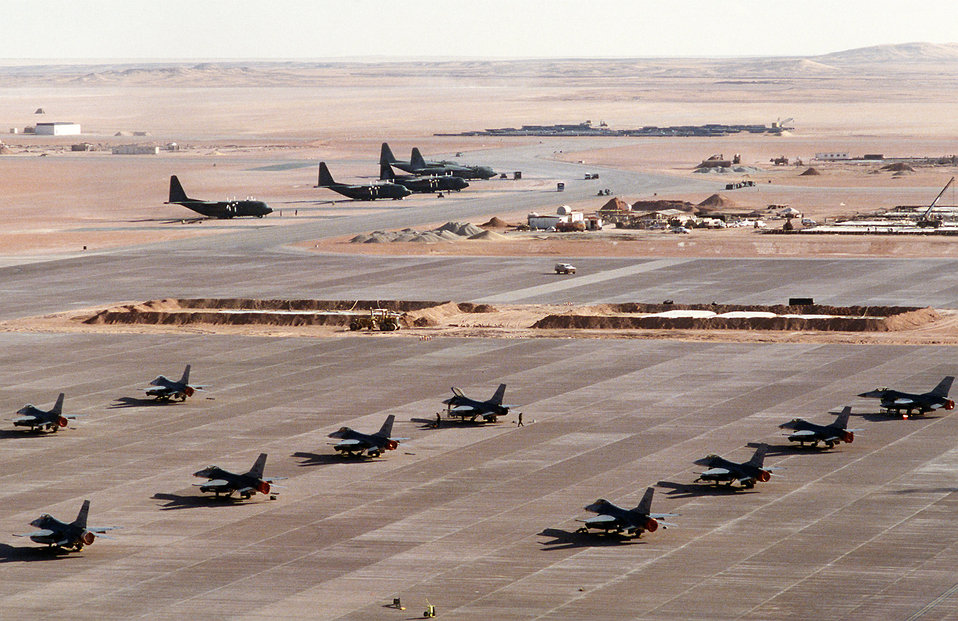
F-16 Fighting Falcon

1990's -- F-16 Fighting Falcon aircraft, foreground, and C-130 Hercules aircraft, background, line an airfield during Operation Desert Shield. The aircraft are assigned to the 157th Tactical Fighter Wing.